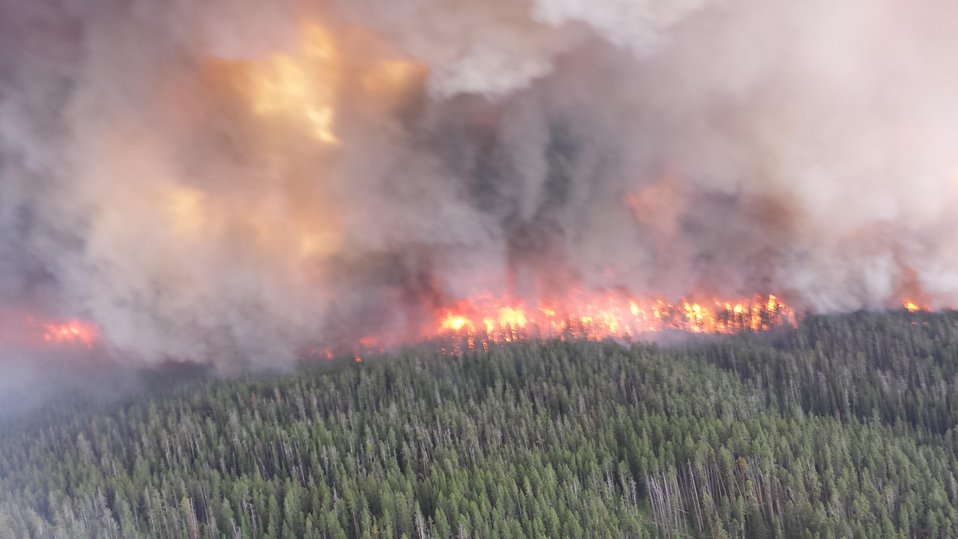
The Druid Complex Fire in Yellowstone National Park in Wyoming began on Aug. 13, 2013 by lighting has consumed approximately 11,658 acres.